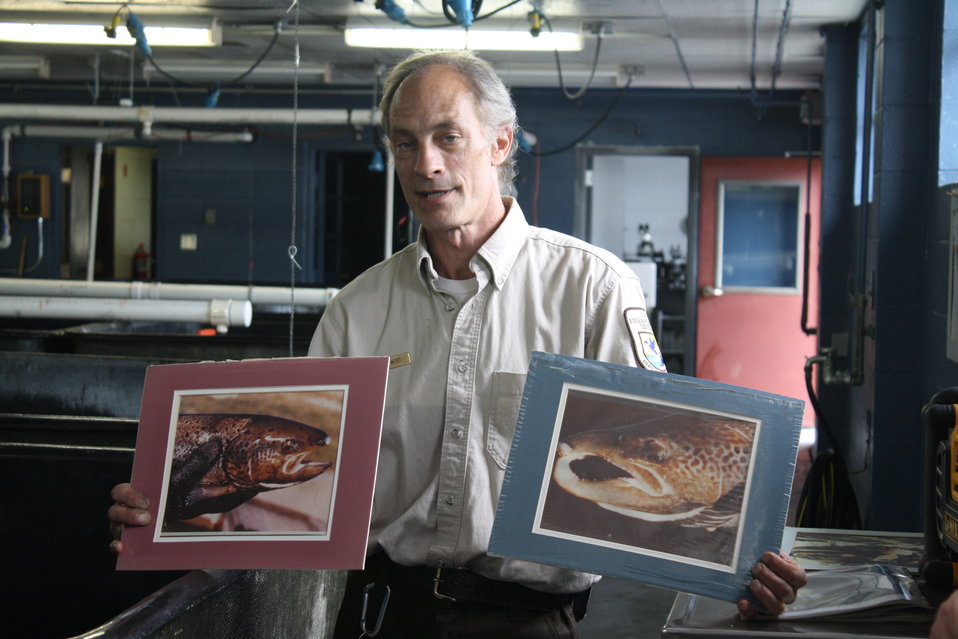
Nashua National Fish hatchery